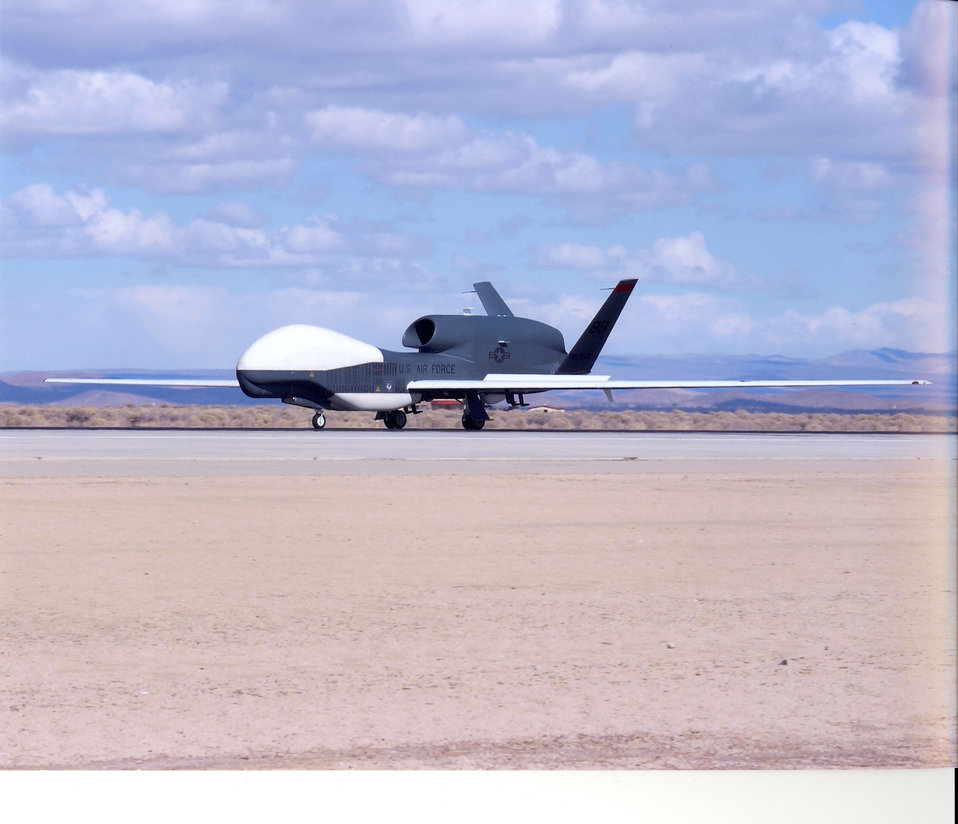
RQ-4 Global Hawk demonstration testing

The RQ-4 Global Hawk unmanned aerial vehicle completed its first flight on Feb. 28, 1998. Even though the system was still undergoing advanced concept technology demonstration testing at Edwards Air Force Base, Calif., the RQ-4 was deployed to support operations in Afghanistan after the terrorist attacks of Sept. 11, 2001.